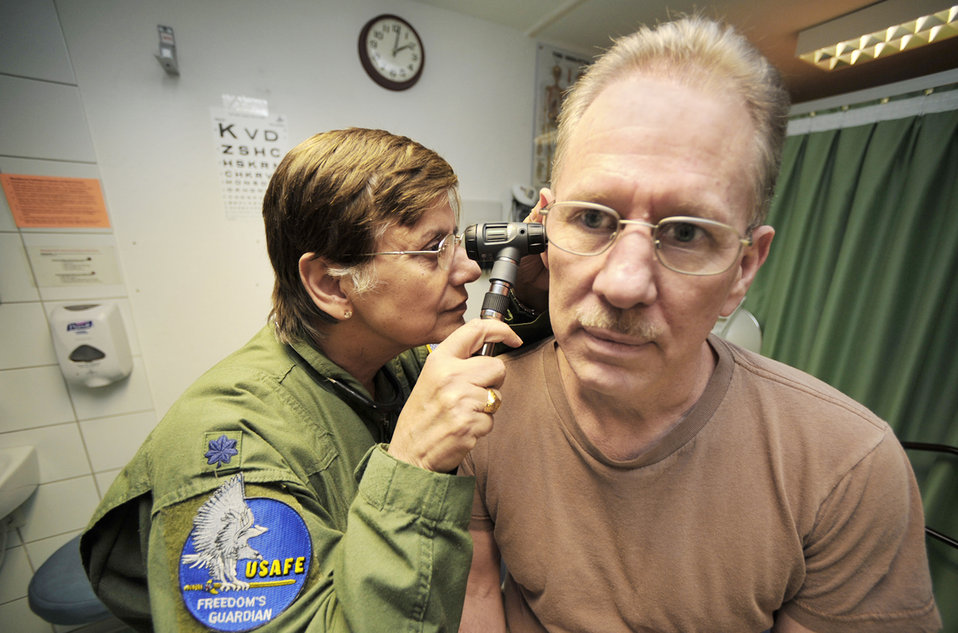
Medical professional save millions with common-sense concept

Navy Capt. Jim Ellinger gets a medical examination from Lt. Col. Shobha Sem during the U.S. European Command European Strategy Conference March 2, 2010 at Ramstein Air Base, Germany. Captain Ellinger is assigned to the EUCOM Office of Defense Cooperation Turkey and Doctor Sem is assigned to the 86th Medical Special Operations Clinic.